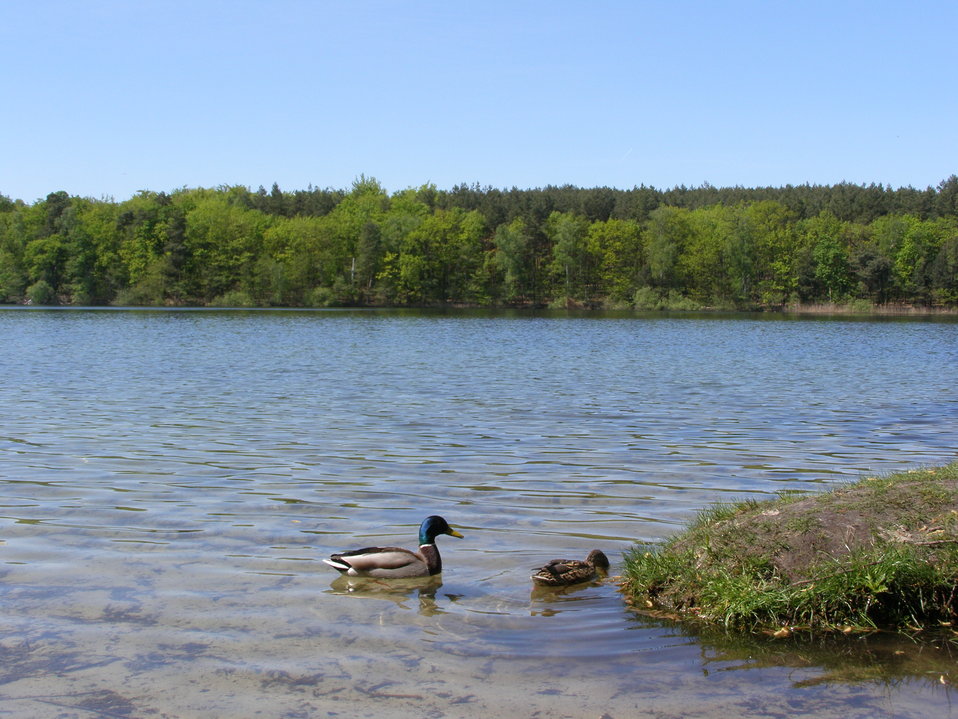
Sacrower See